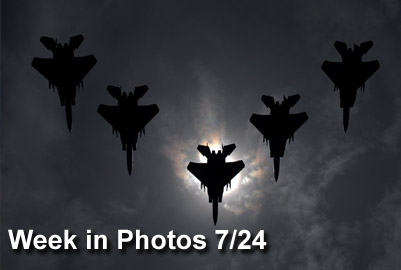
Week in Photos 7/24

Air Force Week in Photos for July 24 highlights photos from around the Air Force. In this photo by Airman 1st Class Chad Warren, a flight of F-15 Eagles fly during a solar eclipse over the island of Okinawa.